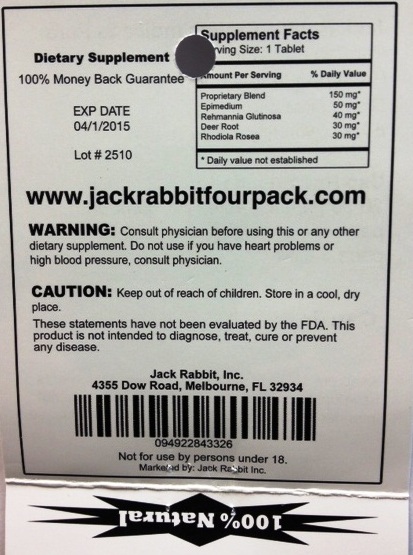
RECALLED – Jack Rabbit

August 12, 2013 – Product Recall – Jack Rabbit Inc. Conducts Voluntary Nationwide Recall of Lot 2510 of Jack Rabbit Dietary Supplement Due to undeclared ingredient.